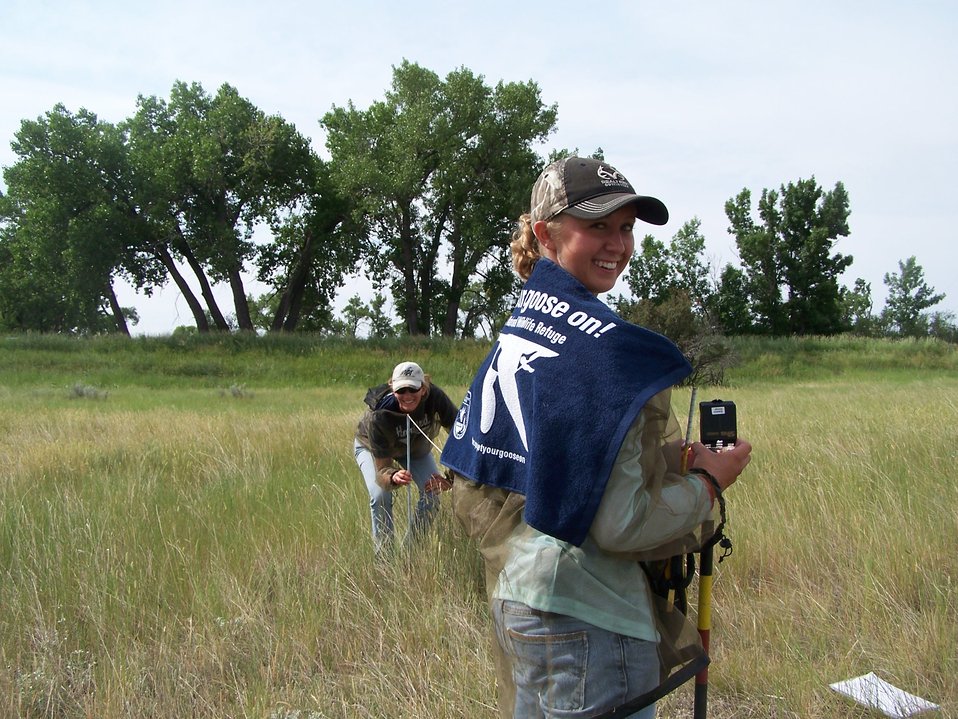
Get Your Goose On!

Bowdoin NWR Summer Technicians doing robel pole reading during vegetation transects with the GYGO towel